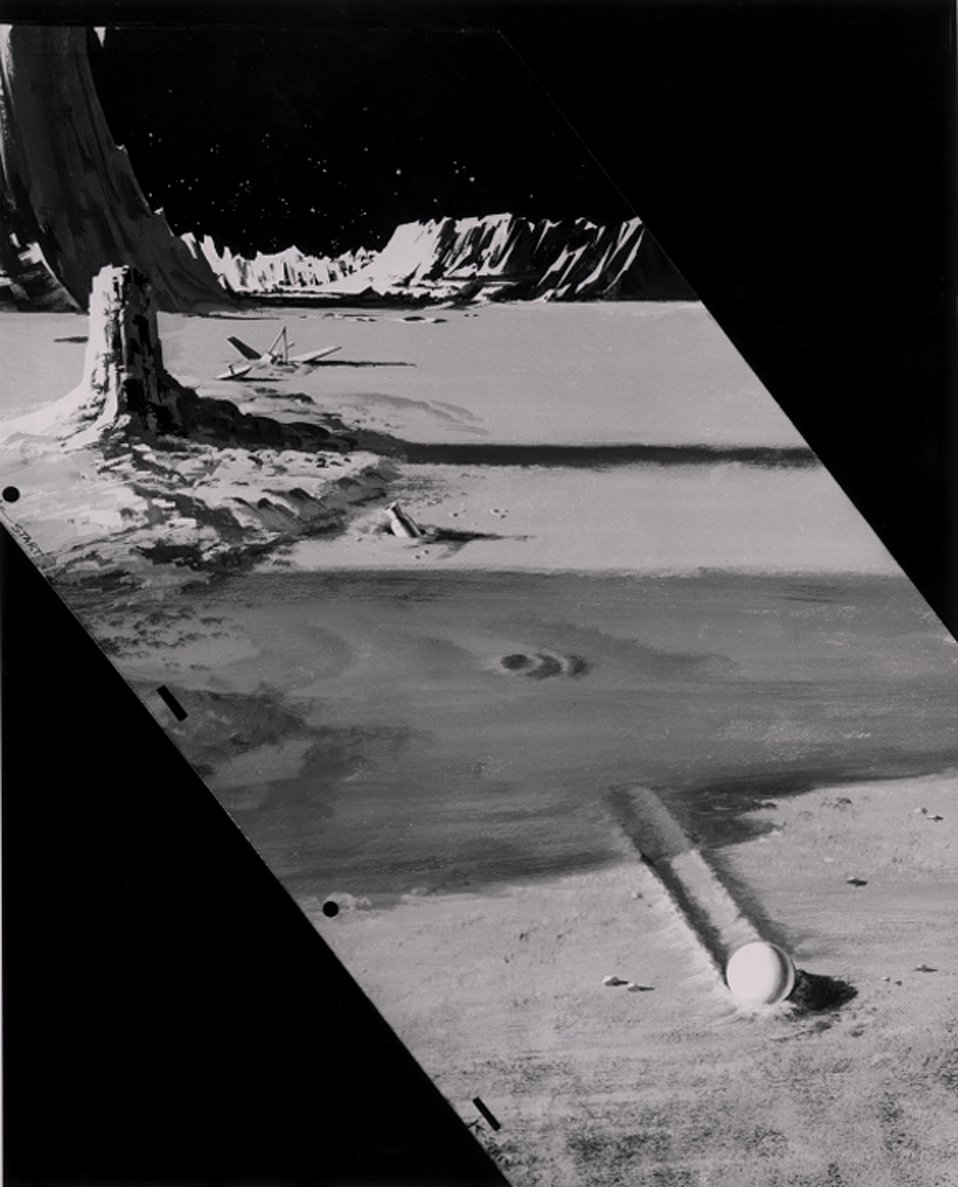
Artist's conception of space exploration showing Ranger vehicle on the moon.